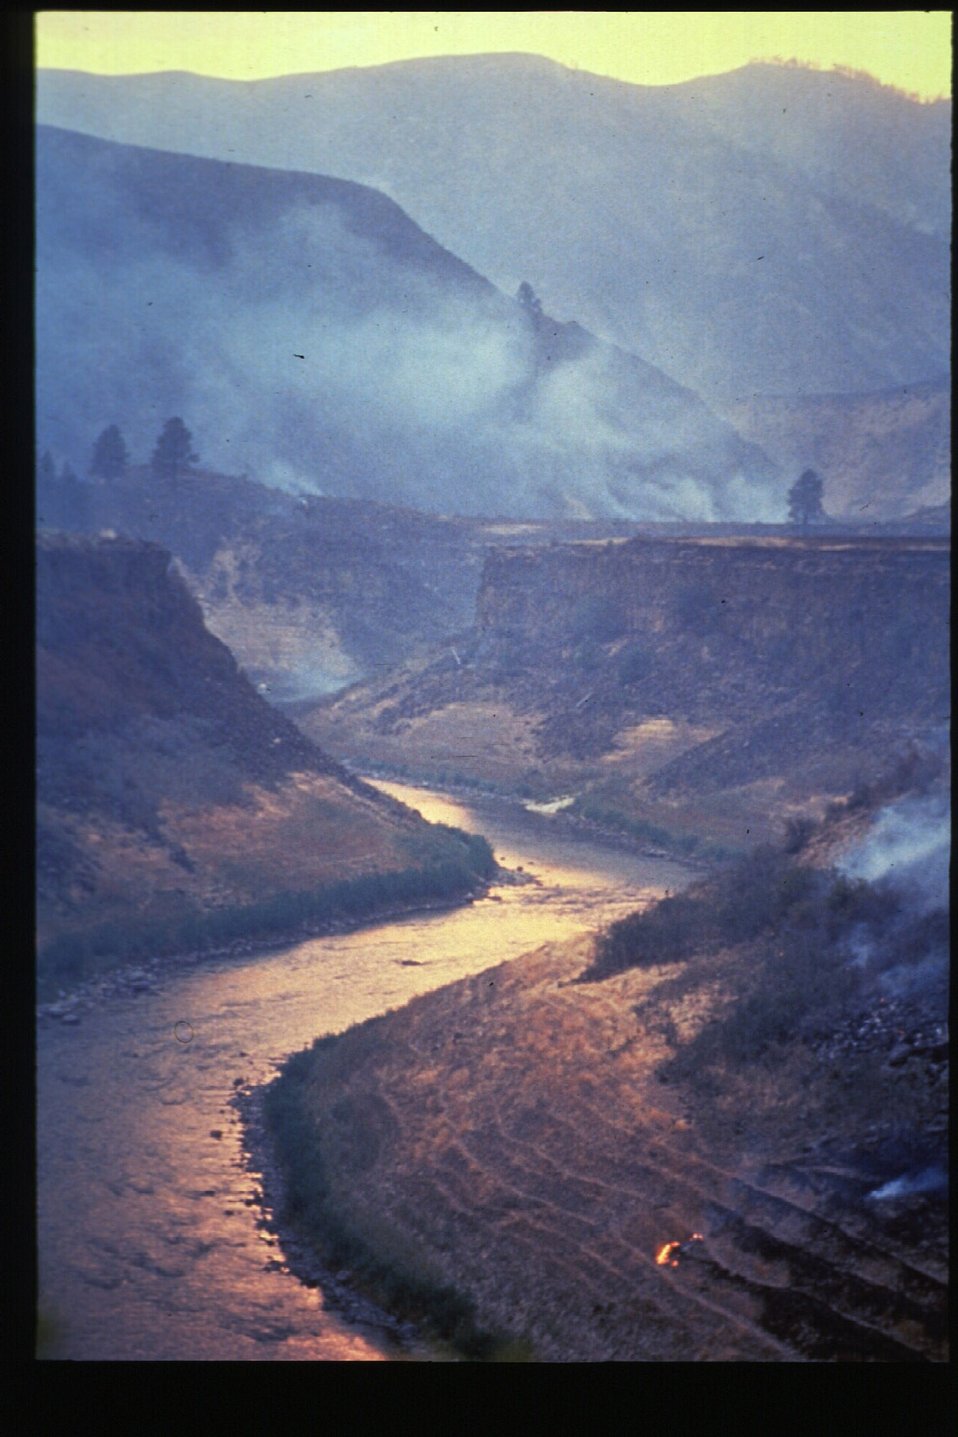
Boise Foothills Fire Danskin Mountains and South Fork of Boise River Four River Field Office LSRD Lower Snake River District